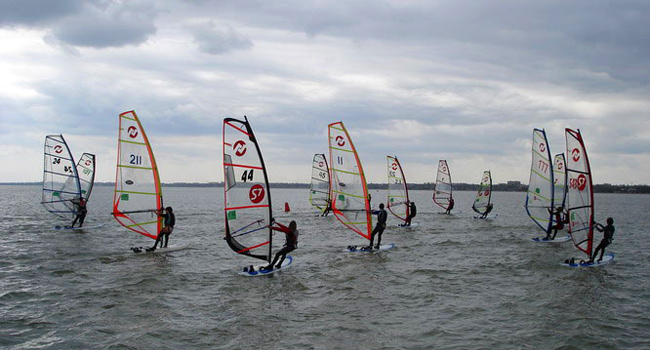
Русский: Соревнование по виндсерфингу